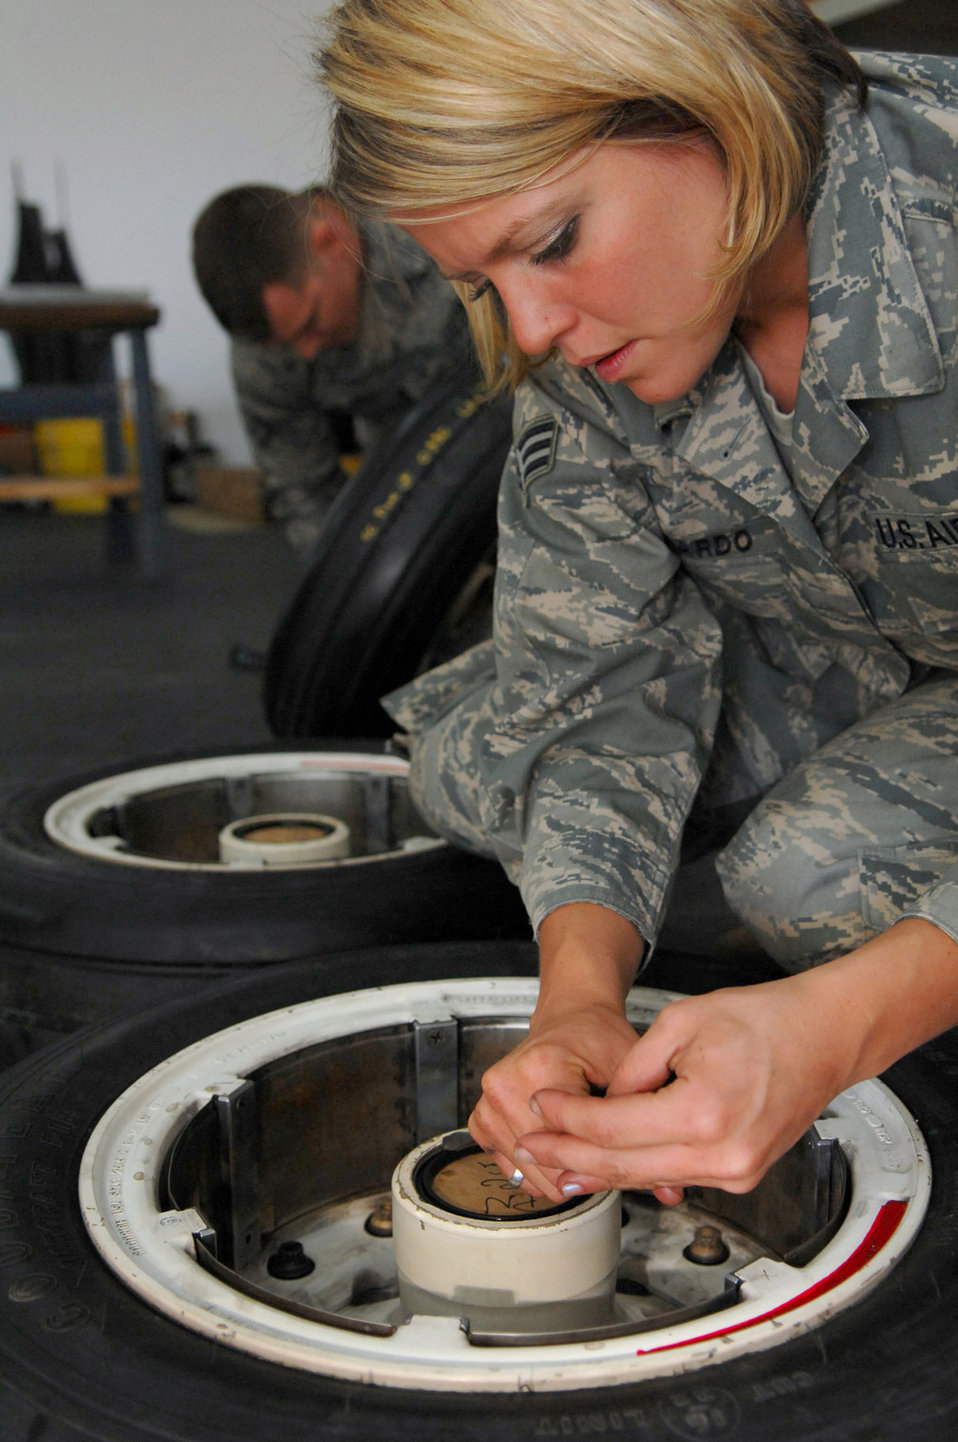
The wheels on the plane

Senior Airman Melissa Gallardo replaces retaining rings on an F-16 Fighting Falcon's main landing gear wheel at Balad Air Base, Iraq. The 332nd Expeditionary Maintenance Squadron provides combat-ready aircraft and munitions to the air component commander in support of coalition forces throughout Iraq. Airman Gallardo is a 332nd EMXS crew chief deployed from the Montana Air National Guard.